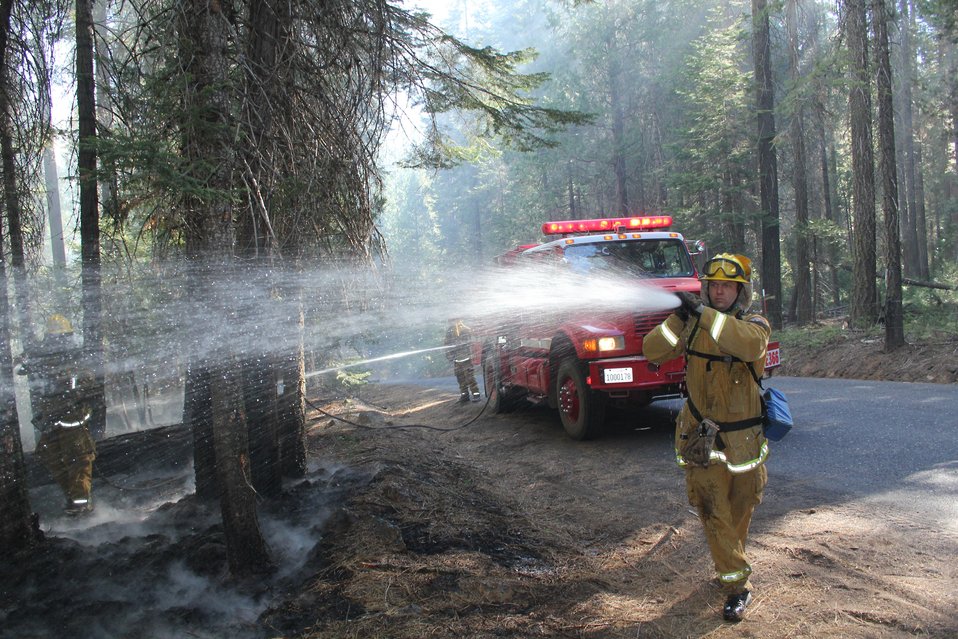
Engine Crew cools fire along Evergreen Road at the Rim Fire. The Rim Fire in the Stanislaus National Forest near in California began on Aug. 17, 2013 and is under investigation. The fire has consumed approximately 192,737 acres and is 30% contained.